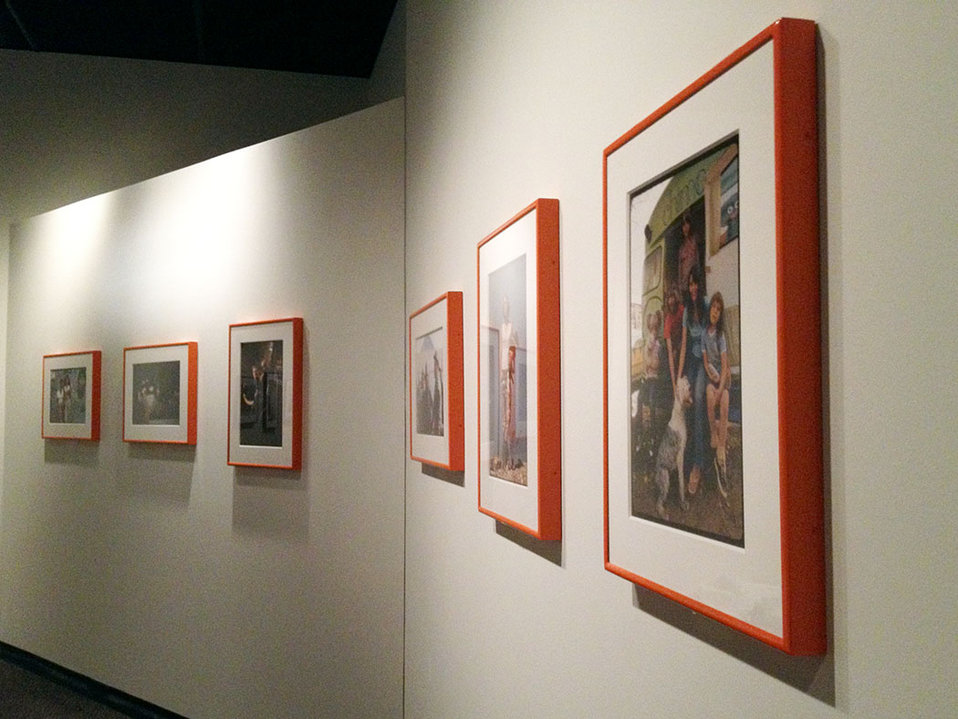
Documerica Photo Installation

More framed photographs just installed for the 'Searching for the Seventies' exhibition.